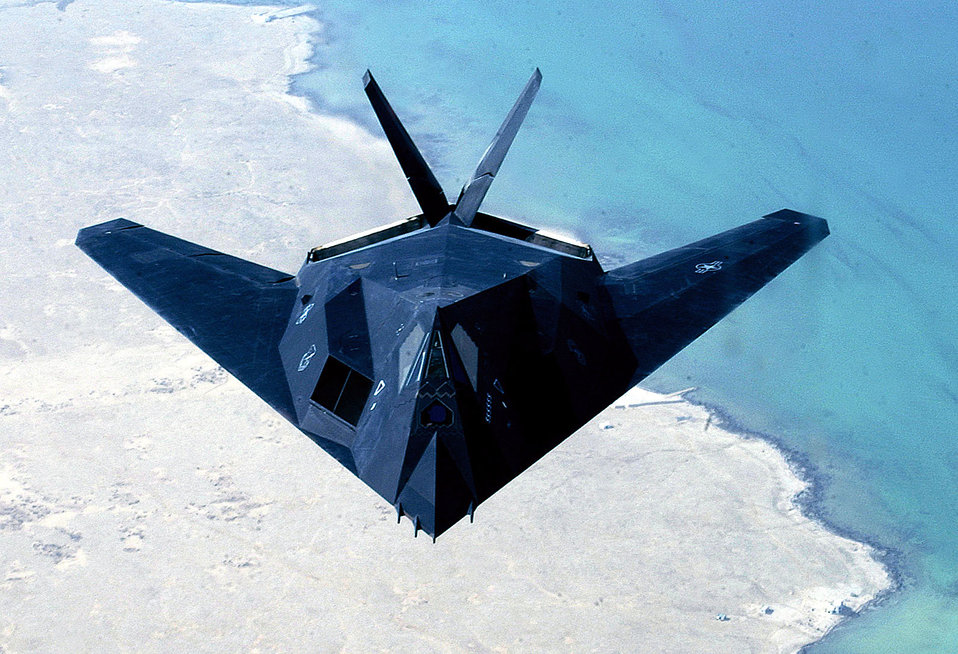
F-117 flight

OPERATION IRAQI FREEDOM -- An F-117 from the 8th Expeditionary Fighter Squadron out of Holloman Air Force Base, N.M., flies over the Persian Gulf on April 14, 2003. The 8th EFS has begun returning to Hollomann A.F.B. after having been deployed to the Middle East in support of Operation Iraqi Freedom.